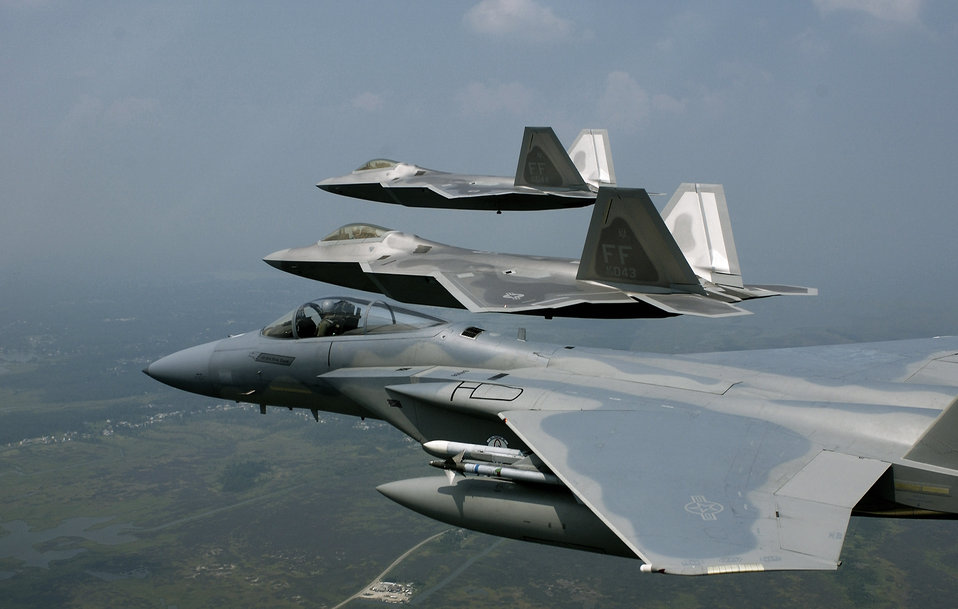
DOD defers F-22 funding decision to next administration

F-22 Raptors fly in formation with an F-15 Eagle. Defense Department officials are only partially funding the expansion of F-22 aircraft production, leaving the decision for further expansion to the incoming presidential administration.